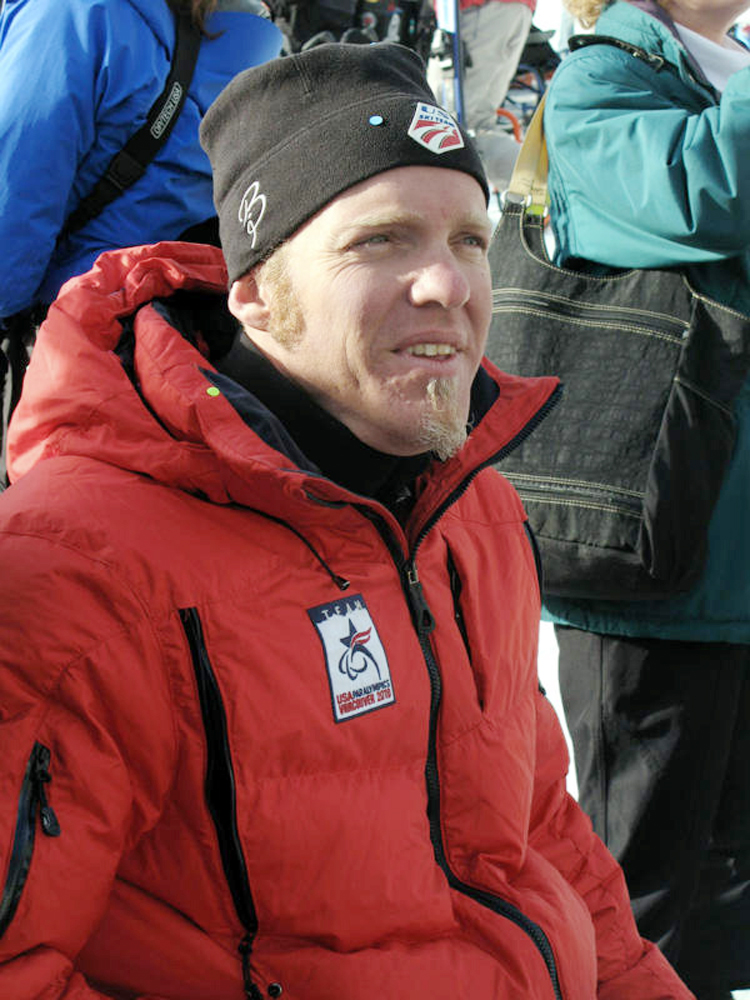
Clinic provides disabled vets pathway to paralympics

Air Force veteran Sean Halsted, who competed in the 2010 Paralympics in Vancouver, Canada, checks out the action on the slopes at the 24th National Disabled American Veterans Winter Sports Clinic March 28, 2010, in Snowmass Village, Colo.